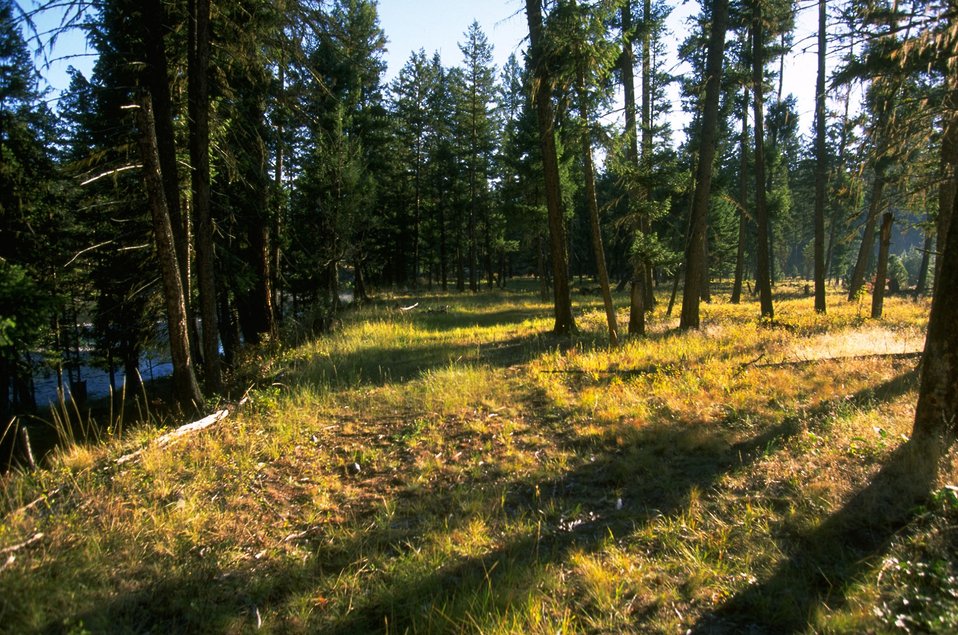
Daigles Eddy Day Use Area along the Blackfoot River